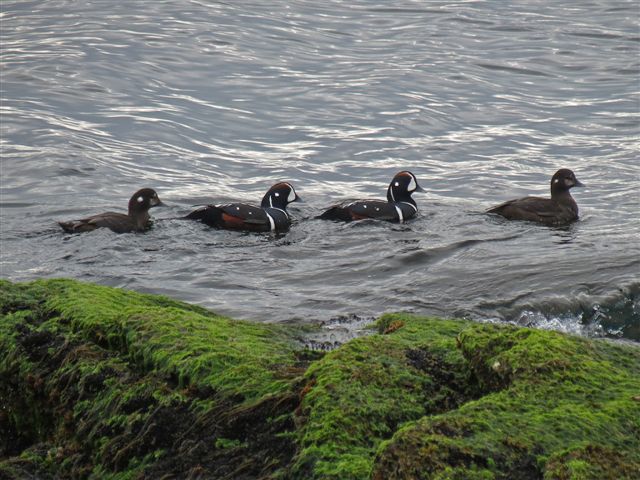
Photo of the Week - Harlequin ducks (RI)

Photo of the Week - 3/26/12

Harlequin ducks swimming at Sachuest Point National Wildlife Refuge in Newport, RI.